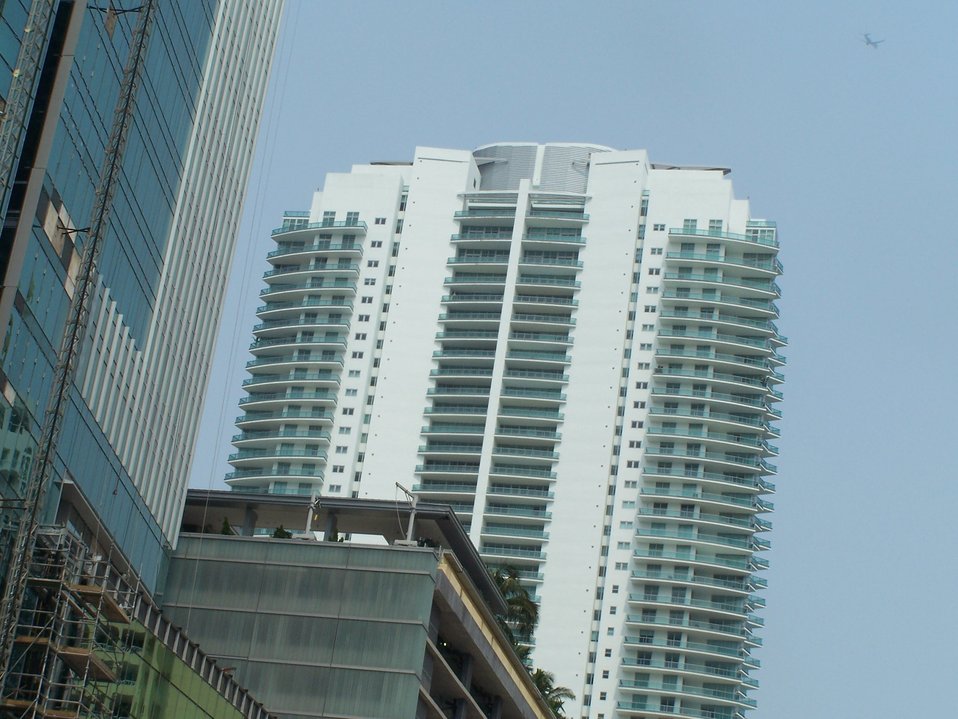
Miami, 5/13/07. Category:Images of Miami